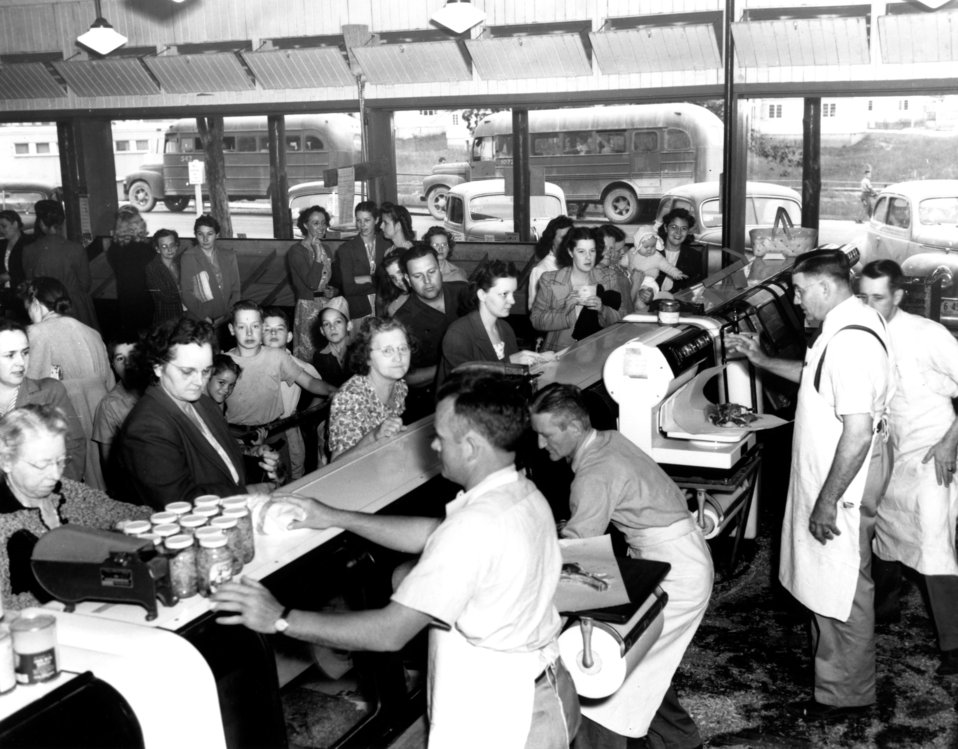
Business activity at Oak Ridge